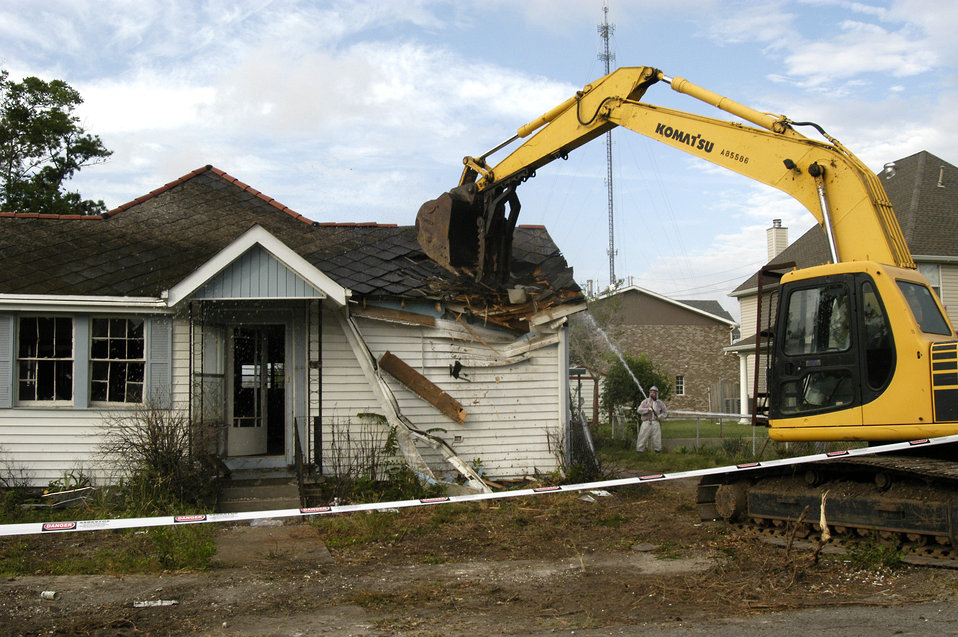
Many of the older homes and buildings in the New Orleans, LA, locale that were destroyed by Hurricane Katrina contained asbestos material (i.e. asbestos roofing tiles, transite siding, insulation, floor tiles, and popcorn ceilings). The U.S. Army Corps of Engineers (USACE) was mandated to follow strict environmental protocols in the demolition of these homes that were designated Regulated Asbestos Containing Material (RACM) demolitions. Prior to and during the demolition of the RACM house, water was constantly sprayed onto the building to prevent the asbestos containing material from becoming “friable” (airborne).